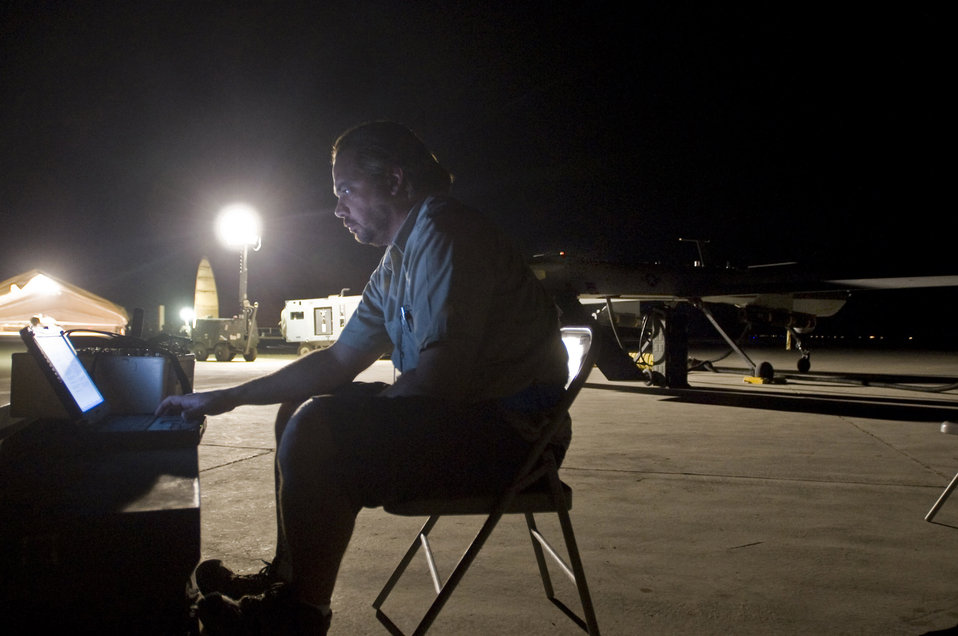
Predator preparations

Troy Schossow reads over revised technical guidelines for the MQ-1 Predator Sept. 3 at Ali Base, Iraq. Through the use of advanced capabilities, focused doctrine and detailed training, the Predator provides integrated and synchronized close air combat operations, to include intelligence, surveillance and reconnaissance. Mr. Schossow is assigned to the 46th Expeditionary Reconnaissance and Attack Squadron Det. 1.